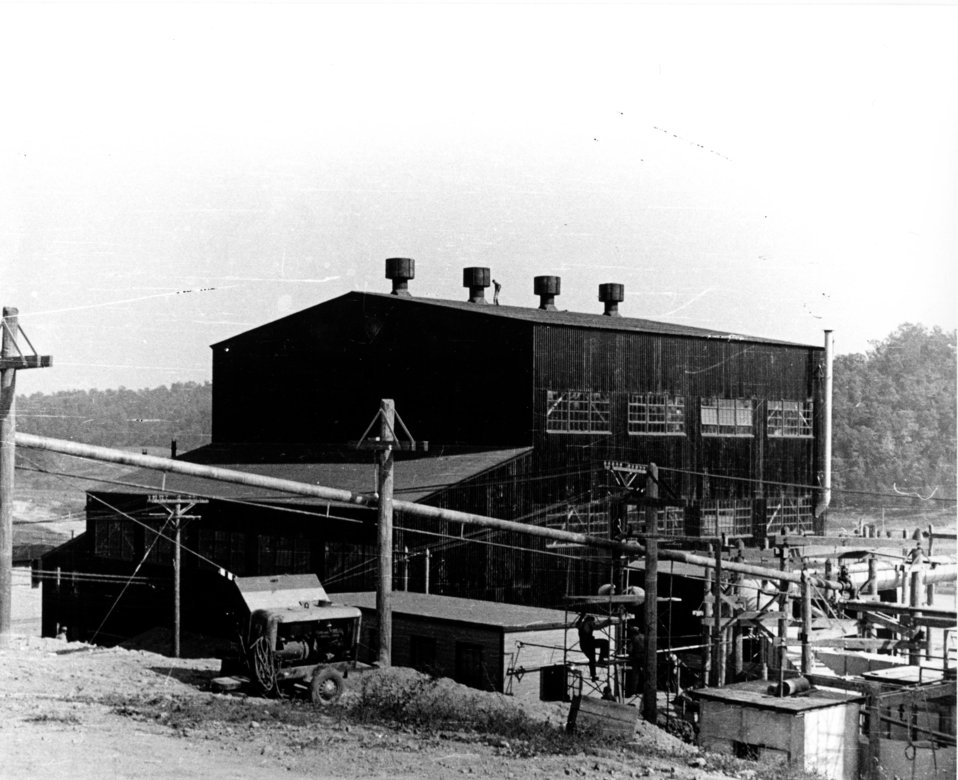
X-10 at Oak Ridge